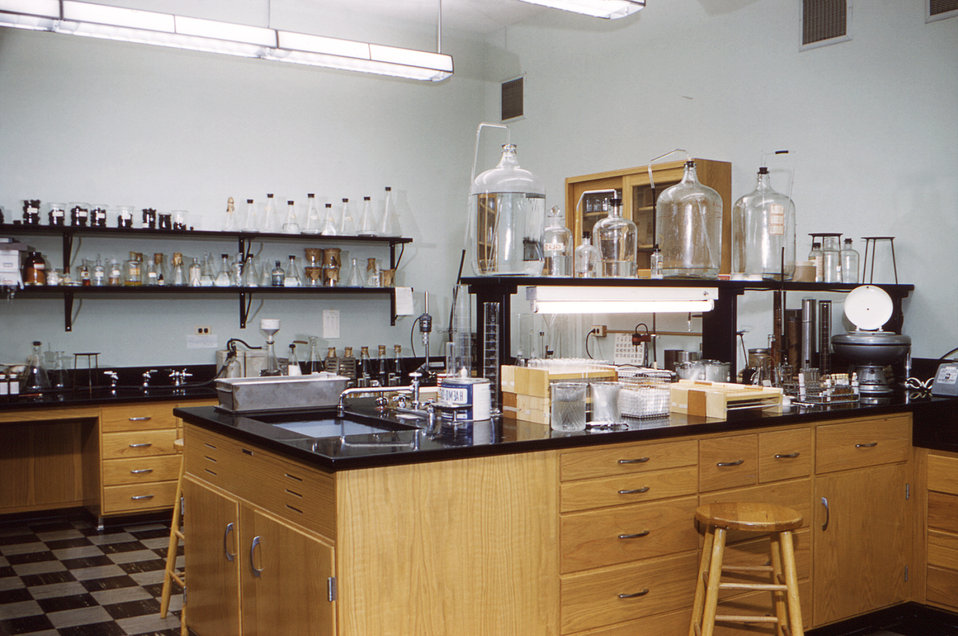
This historic 1961 image depicts the interior of what was designated as the Helminthology Laboratory inside Building 1 at the Centers for Disease Control and Prevention's (CDC), Clifton Road headquarters, in Atlanta, Georgia. Helminthology is the study of worms, with a focus on parasitic worms.